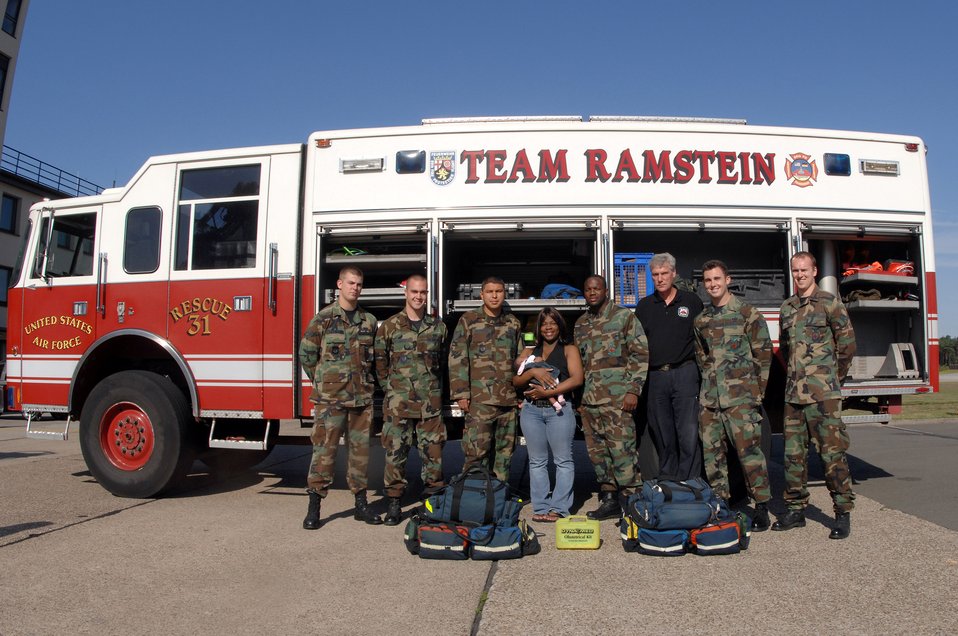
Unexpected delivery made at Ramstein's gate

Senior Airman Kenyata Jenkins and her new born baby Jordan Dixon (middle) pose for a group photo with the 435th Civil Engineer firefighters July 16 at Ramstein Air Base Germany. The 435th firefighters delivered the baby at the base's west gate July 1 when Airman Jenkins' labor progressed too quickly for her to make it to Landstuhl Regional Medical Center.